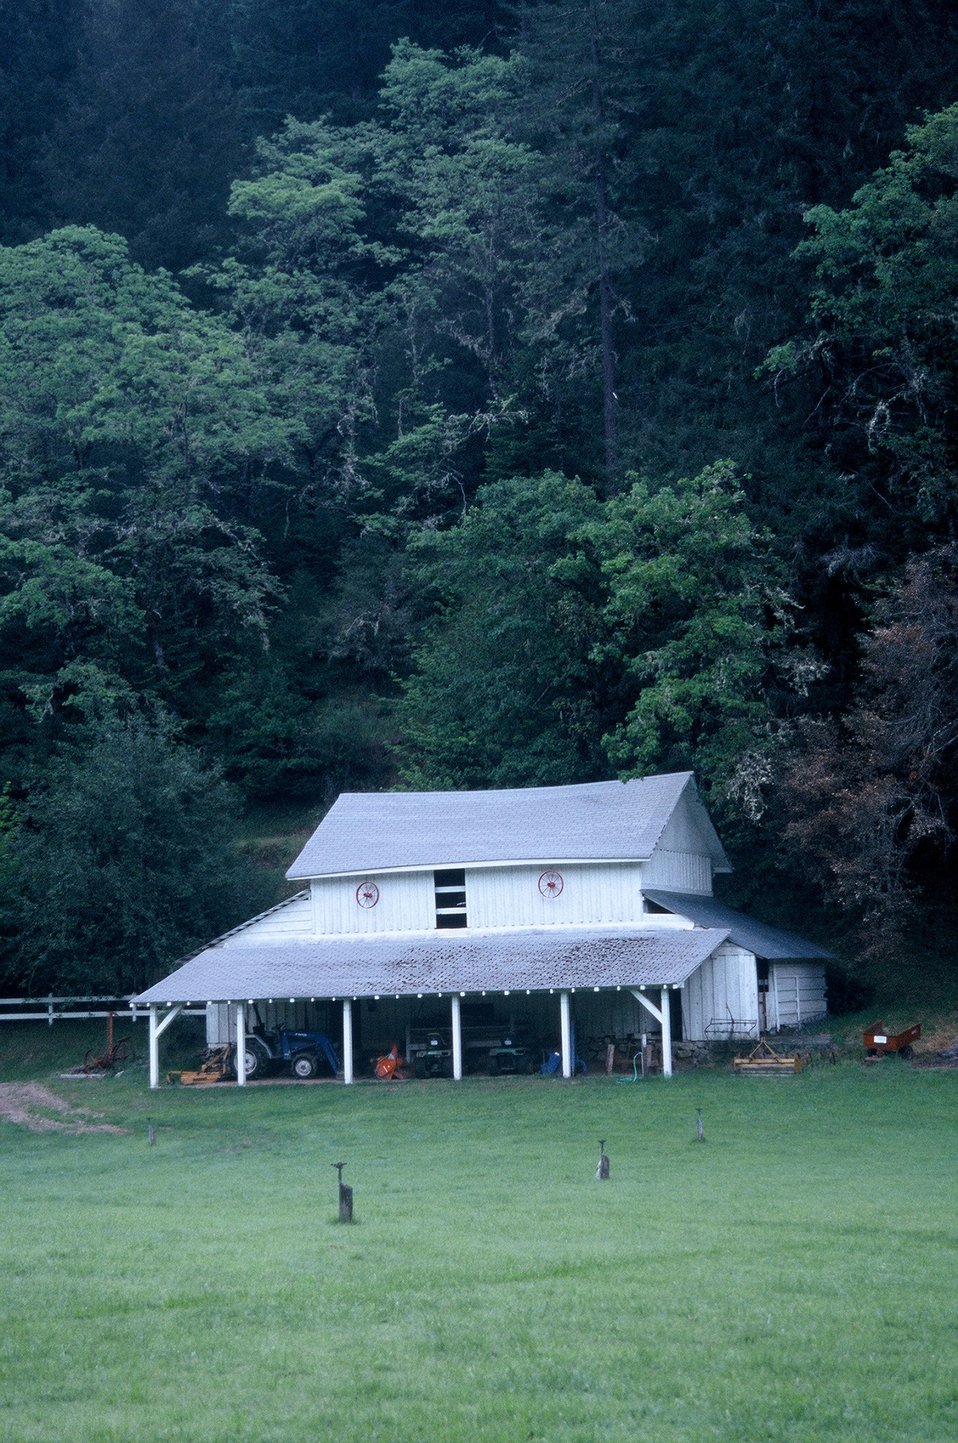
Wild section of the Rogue River from Grave Creek to Foster Bar May 19 to May 22.